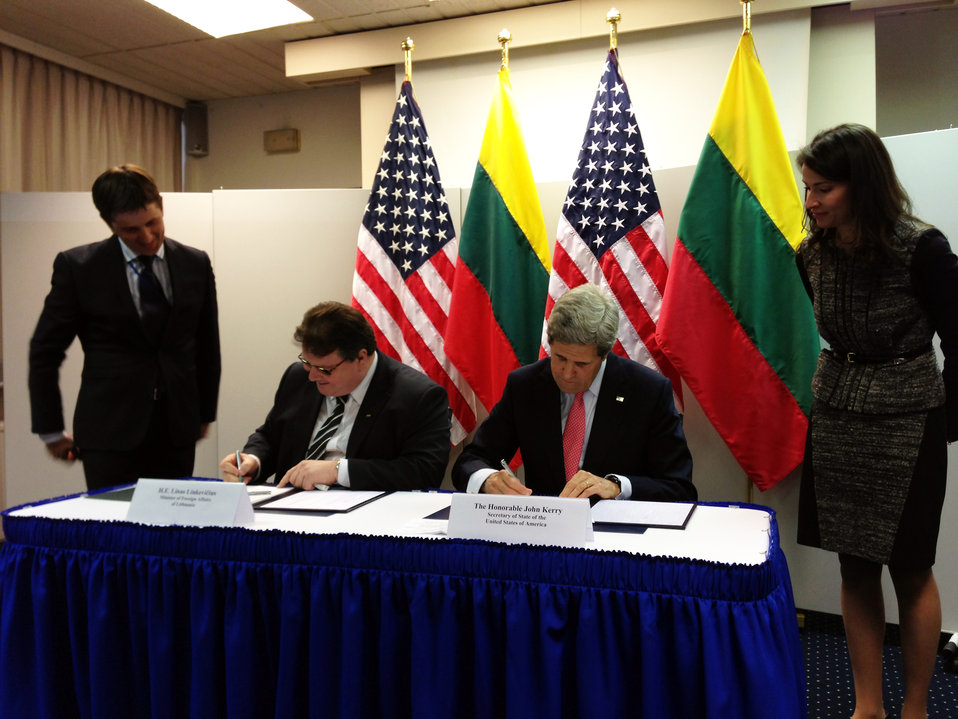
Secretary Kerry and Lithuanian Foreign Minister Linkevicius Sign Agreement for Cooperation on Countering Nuclear Smuggling

U.S. Secretary of State John Kerry and Lithuanian Foreign Affairs Minister Linas Linkevicius sign an agreement to advance protection against nuclear and radiological smuggling in Brussels, Belgium, on April 23, 2013.